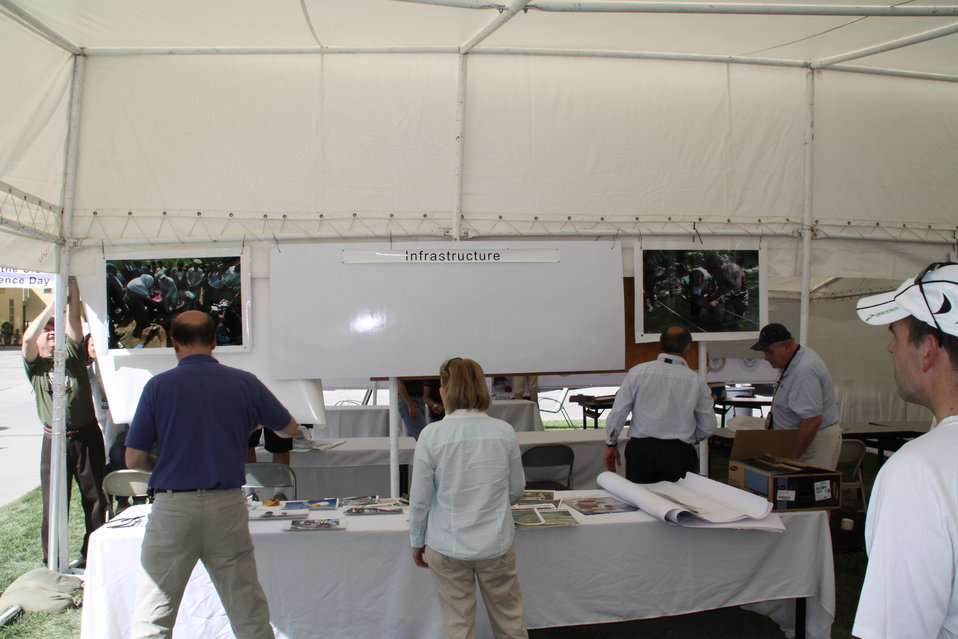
Official July 4th Event Preparation